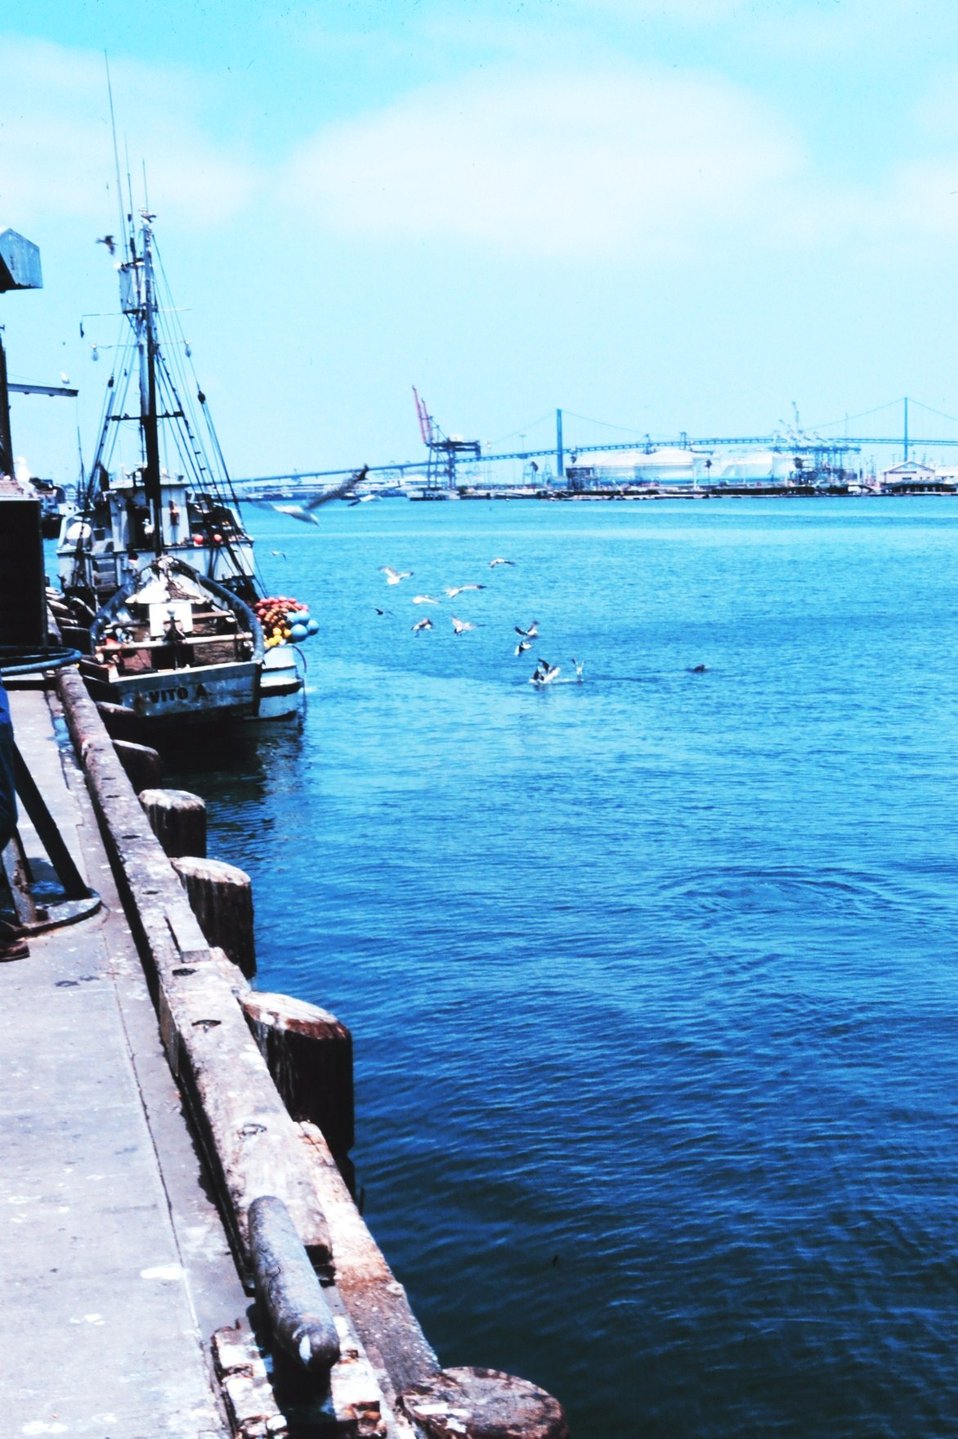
The Fishing Vessel VITO unloads anchovy at Fishermen's Terminal